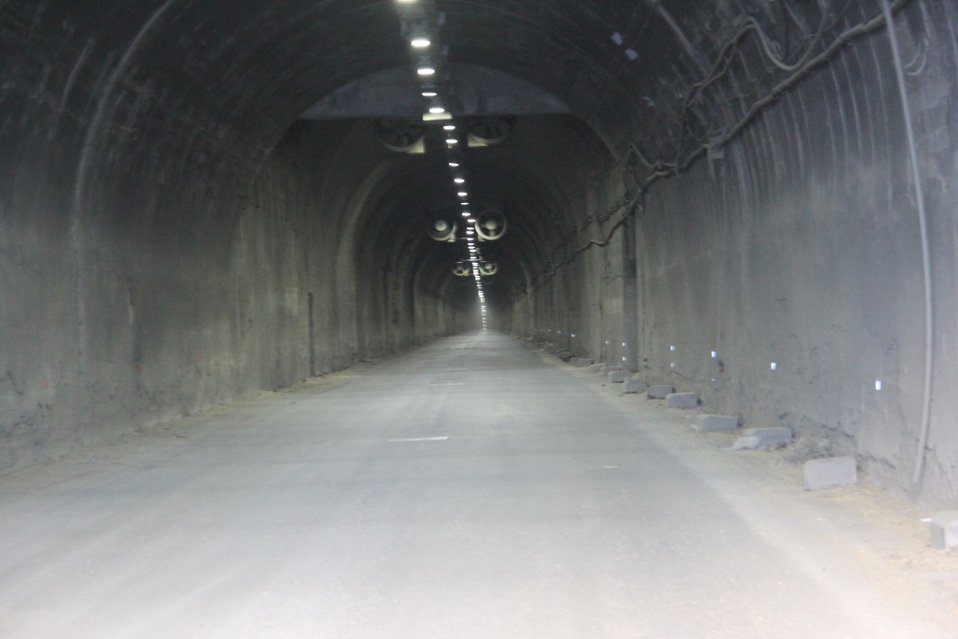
New ventilation system was installed in the Salang tunnel during the latest rehabilitation work (November 25, 2013)